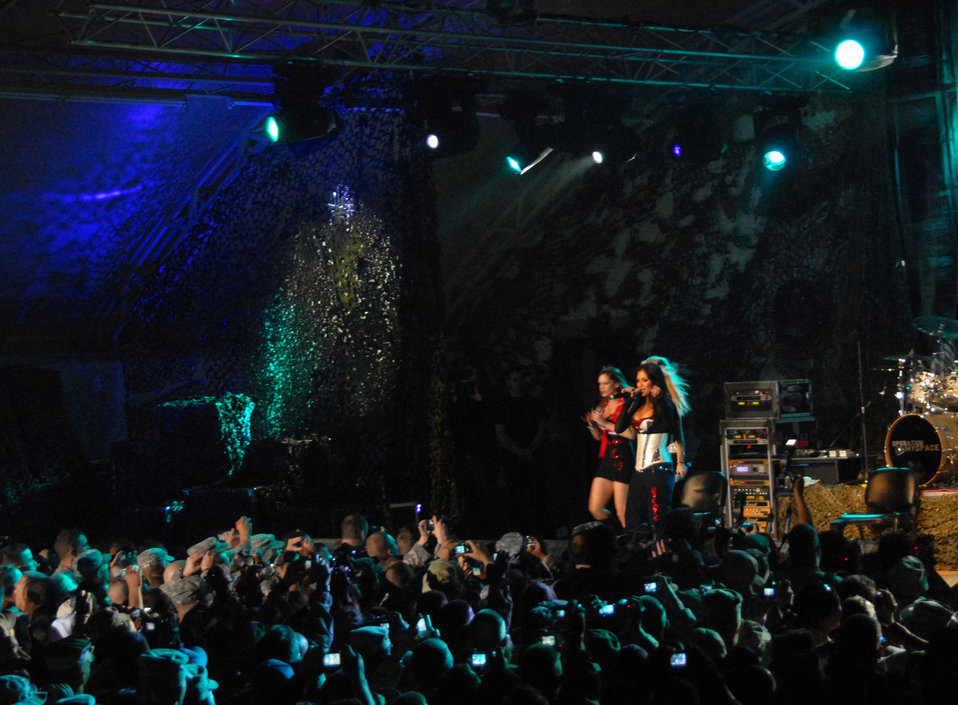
Operation MySpace

The Pussycat Dolls perform one of their songs for more than 2,000 U.S. and coalition servicemembers during a live concert March 10 at a U.S. Army camp in Southwest Asia. MySpace, in cooperation with Department of Defense's Armed Forces Entertainment and America Supports You program, brought Operation MySpace to servicemembers headed into and out of Afghanistan and Iraq. This landmark concert, with entertainment acts from Disturbed, Filter, Pussycat Dolls, DJ Z-Trip, and host Carlos Mencia, provided a taste of home via the wonder of live music to troops supporting operations Enduring Freedom and Iraqi Freedom.